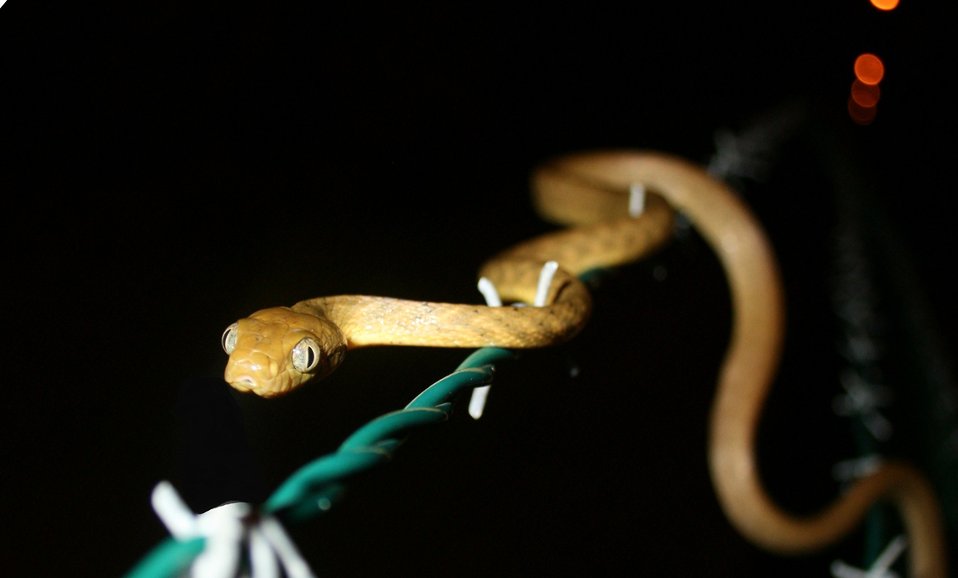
The U.S. Department of Agriculture (USDA) Animal Plant Health and Inspection Service (APHIS) Wildlife Services (WS) scientists and partners estimate the current population of invasive brown treesnakes on Guam is approximately 1-2 million. The snakes have caused the extinction of most of the island’s native wildlife; thousands of power outages; widespread loss of domestic birds and pets; and considerable emotional trauma to residents and visitors.